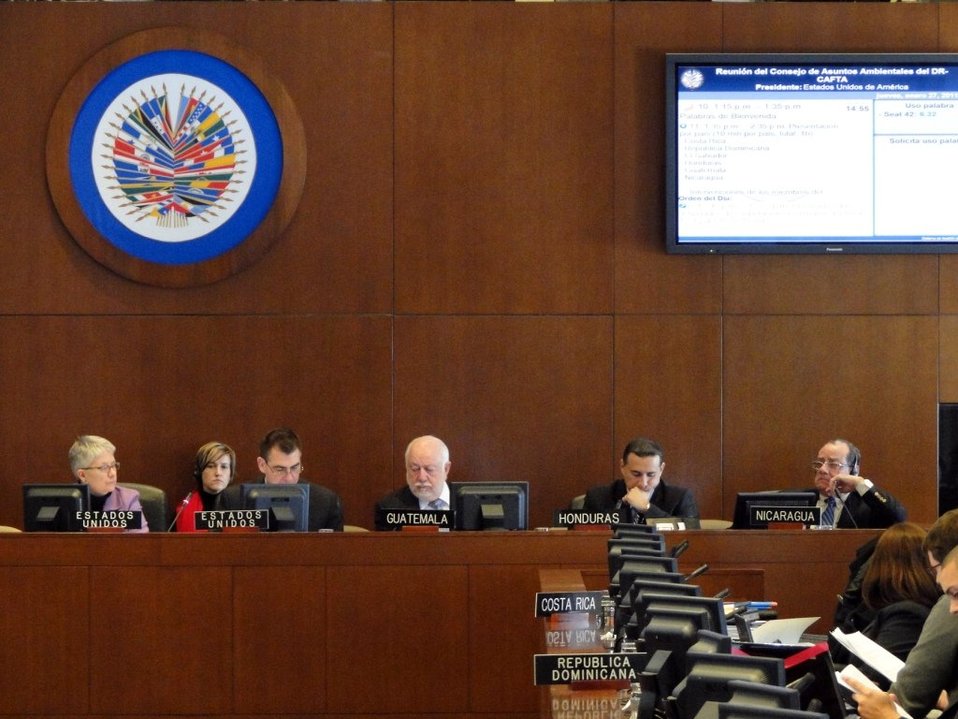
Assistant Secretary Dr. Jones and Representative Linscott Participate in a Meeting

Assistant Secretary of State for Oceans and International Environmental and Scientific Affairs Dr. Kerri-Ann Jones, left, and Assistant U.S. Trade Representative for Environment and Natural Resources Mark Linscott, second from left, participate in the CAFTA-DR Environmental Affairs Council (EAC) meeting in Washington, D.C., on January 27, 2011.